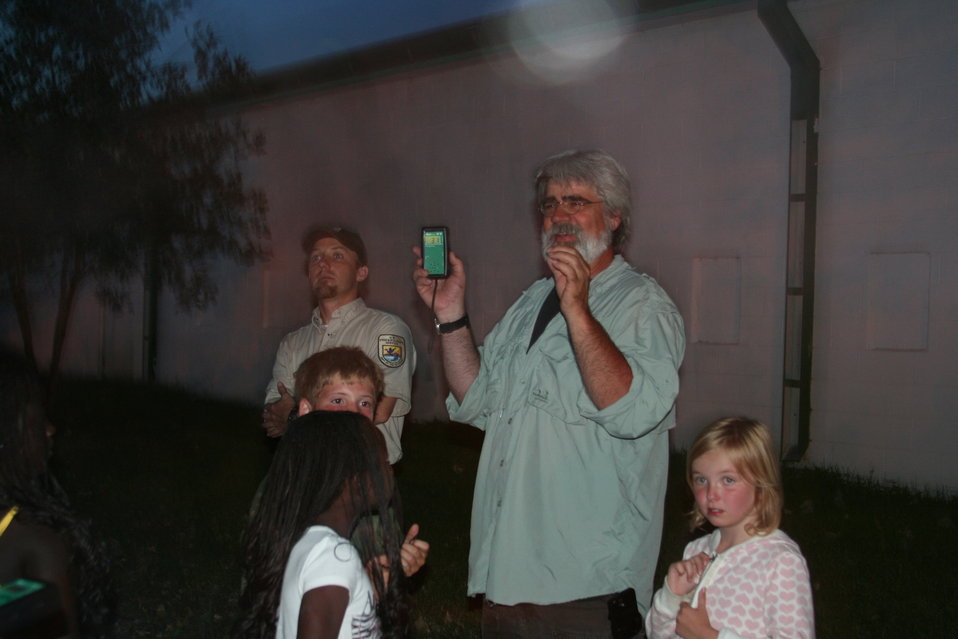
Creatures of the Night 2011

Joel Tigner with a bat detecting device. It responds when the device detects bat echolocation sounds. Several bats were found that night.